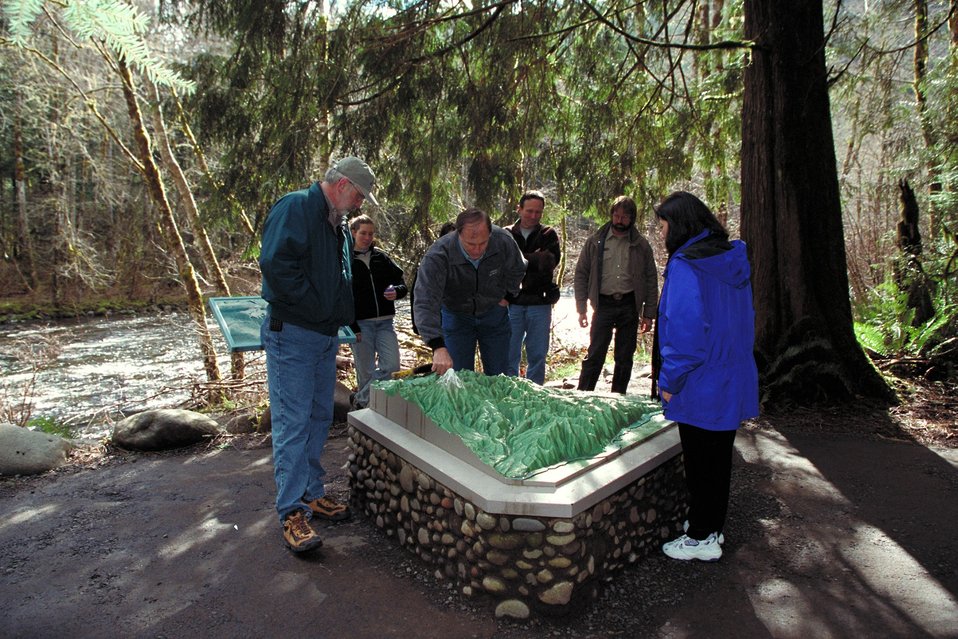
Cascade Stream Watch is an environmental education program conducted at BLM's Wildwood Recreation site.